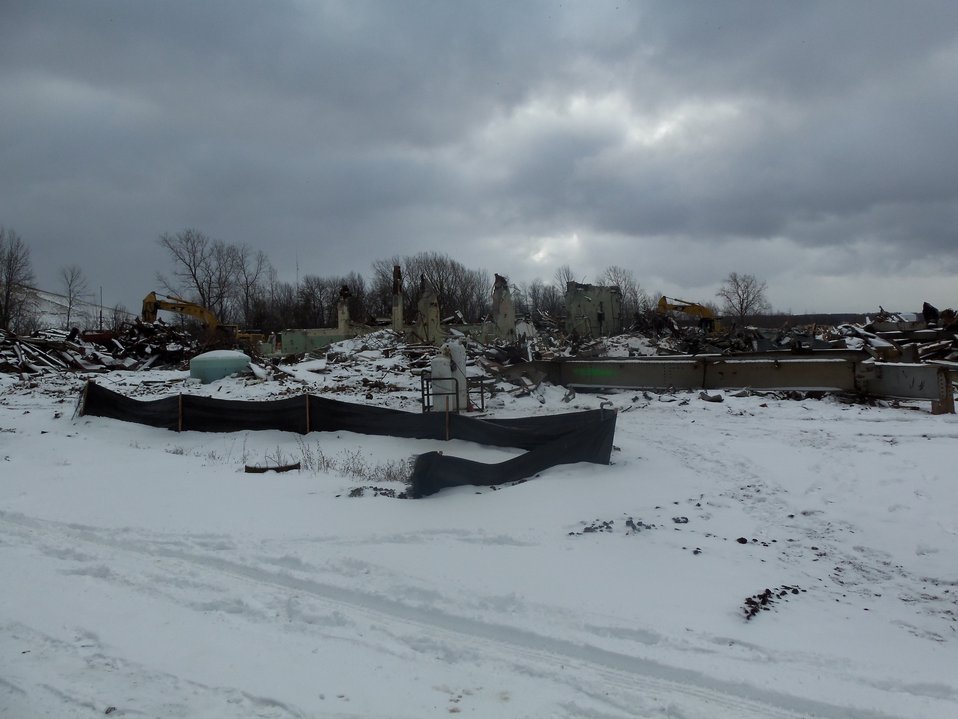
BLDG 401 DEBRIS AND BASE OF BUILDING.

Activities from the Niagara Falls Storage Site, which is associated with the former Lake Ontario Ordnance Works. Formerly Utilized Sites Remedial Action Program (FUSRAP), a program initiated in 1974 to identify, investigate and clean up or control sites that were part of the Nation's early atomic energy and weapons program. Activities at the sites that are eligible for FUSRAP were conducted by Manhattan Engineer District (MED) or the Atomic Energy Commission (AEC), both predecessors of the Department of Energy (DOE). The U.S. Army Corps of Engineers was assigned management of FUSRAP by Congress in 1997.